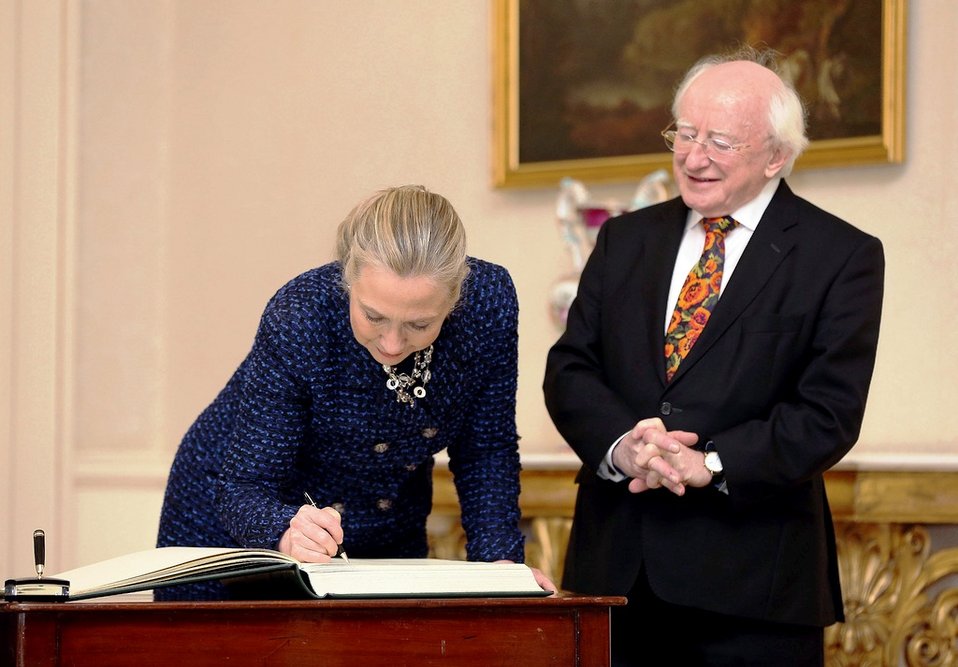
Secretary Clinton Signs the Guestbook at Aras An Uachtarain

U.S. Secretary of State Hillary Rodham Clinton signs the guestbook at Aras An Uachtarain with Irish President Michael D. Higgins in Dublin, Ireland, December 6, 2012.